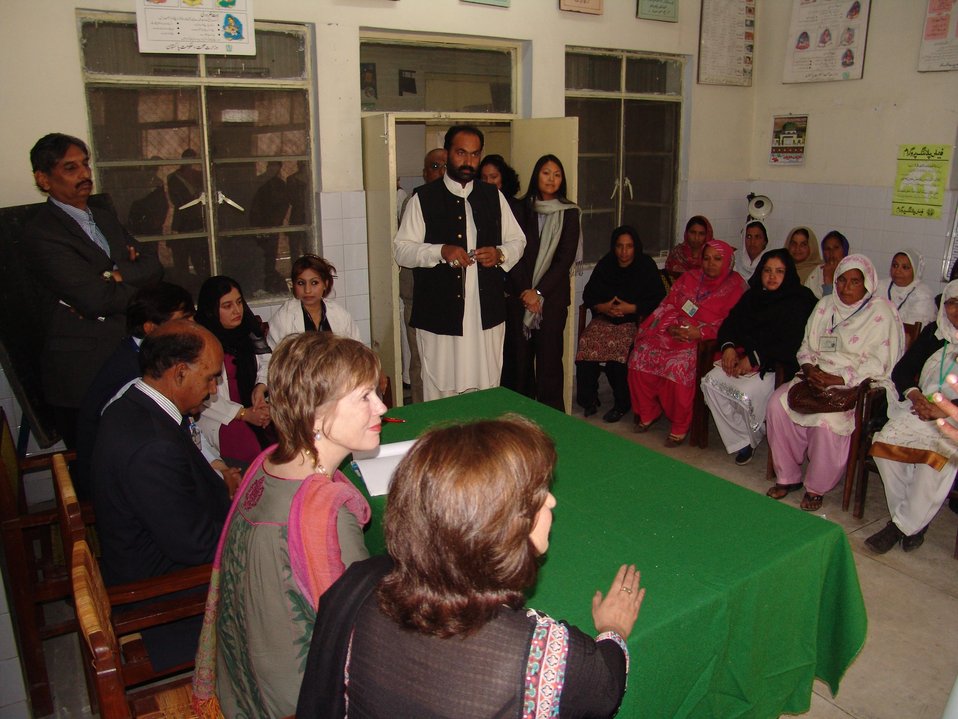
Rural Health Center Care for Mothers and Newborn Children

Gujar Khan, March 6, 2012 – Dr. Marilyn Wyatt, wife of U.S. Ambassador Cameron Munter, highlighted U.S.-Pakistan cooperation in the healthcare sector during her visit to Mandra Rural Health Center in Gujar Khan Tehsil Headquarters Hospital. Dr. Wyatt met with doctors, healthcare workers, patients, and community members